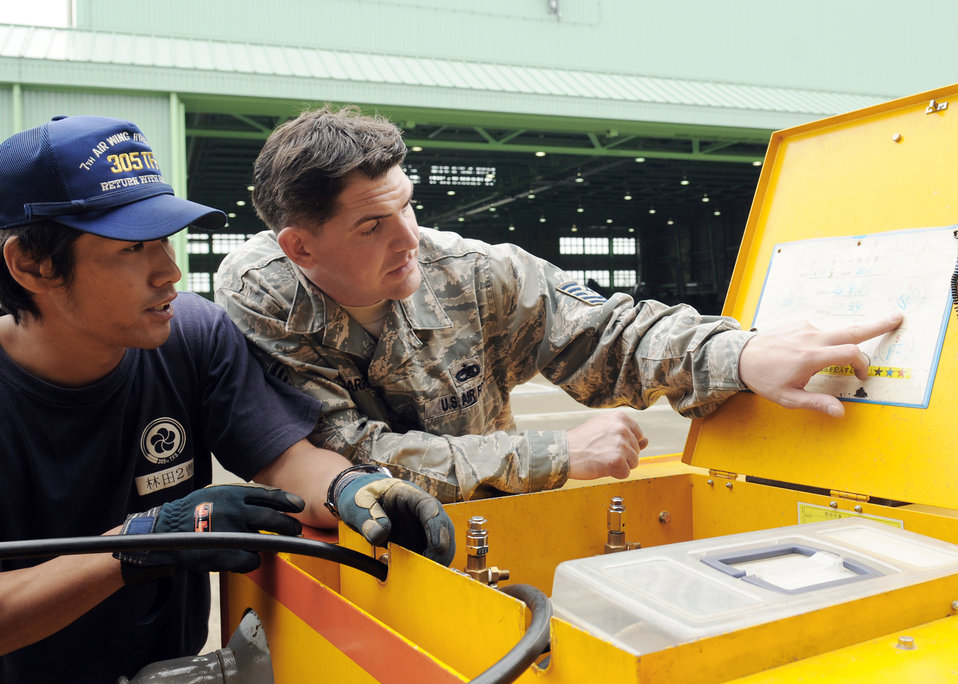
Kadena maintainers train on Japanese equipment during exercise

Tech. Sgt. Kevin Charrier receives training from Japan Air Self Defense Force Staff Sgt. Hayashida on aerospace ground equipment they will use during their Oct. 3, 2009, visit to Hyakuri Air Base, Japan. The visit is part of an aviation training relocation exercise between Kadena AB, Okinawa and Japan Air Self Defense Force members. Sergeant Charrier is an expeditor with the 67th Aircraft Maintenance Unit from Kadena Air Base, Japan.